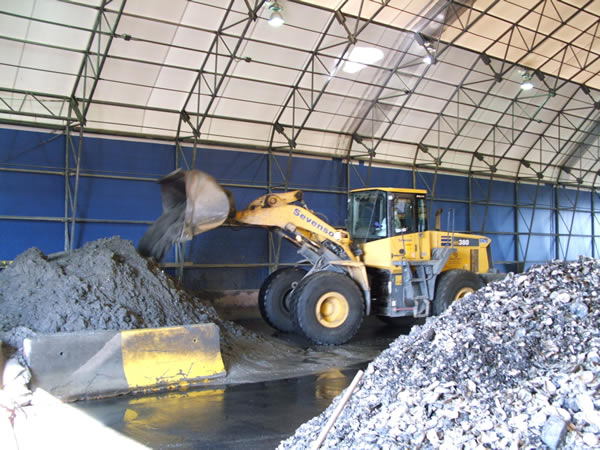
October 2009, Inside the de-sanding operations